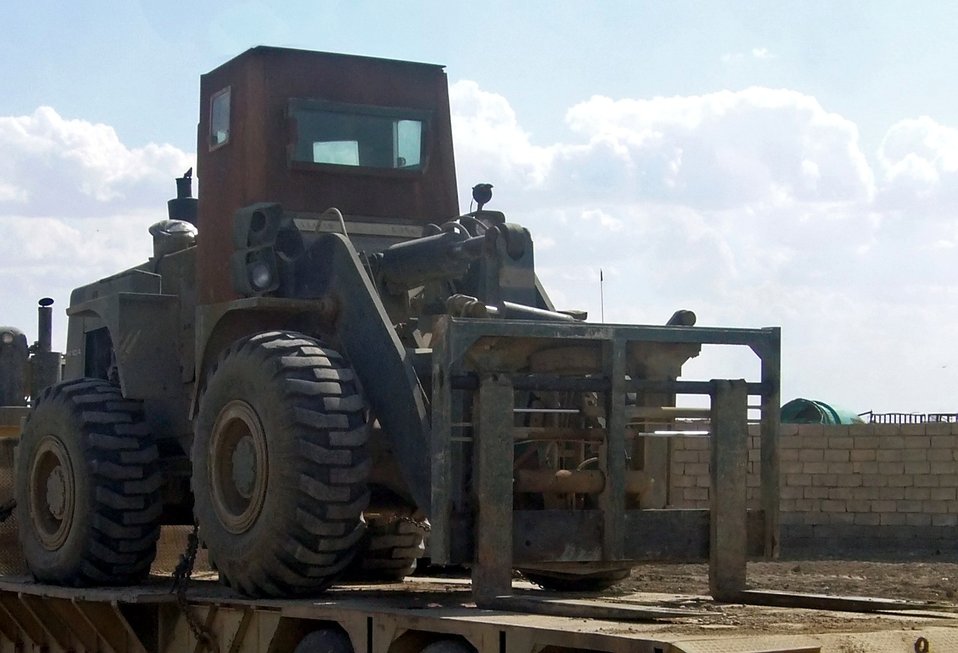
taken by Andy Patton 9APR07